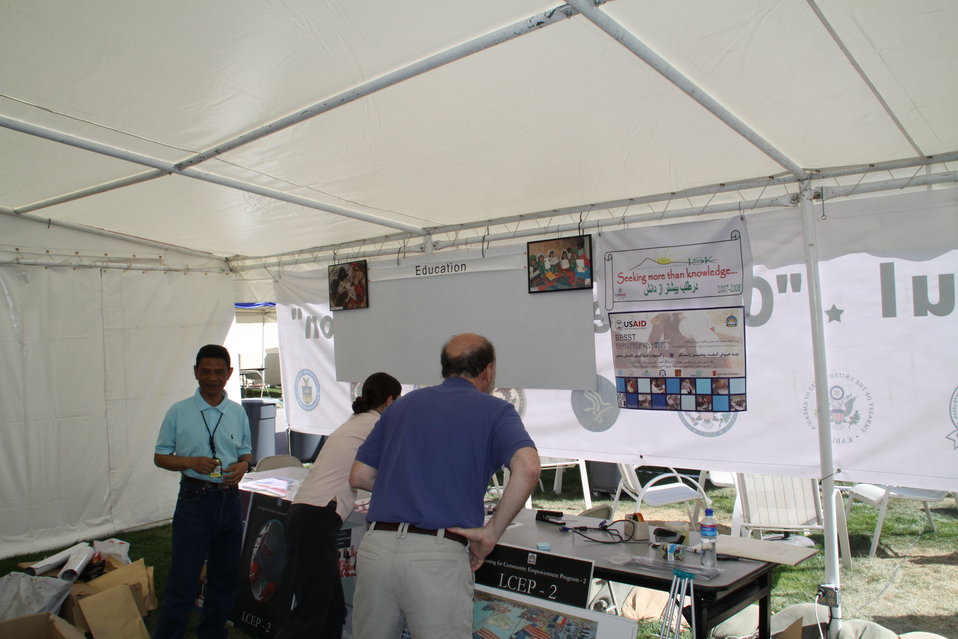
Official July 4th Event Preparation